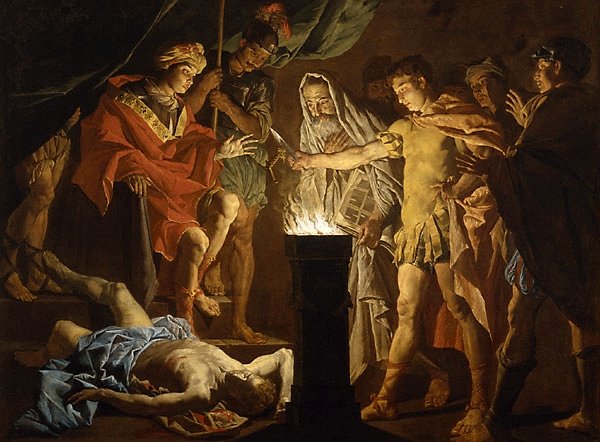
'Mucius Scaevola in the Presence of Lars Porsenna', oil on canvas painting by Matthias Stomer, early 1640s, Art Gallery of New South Wales